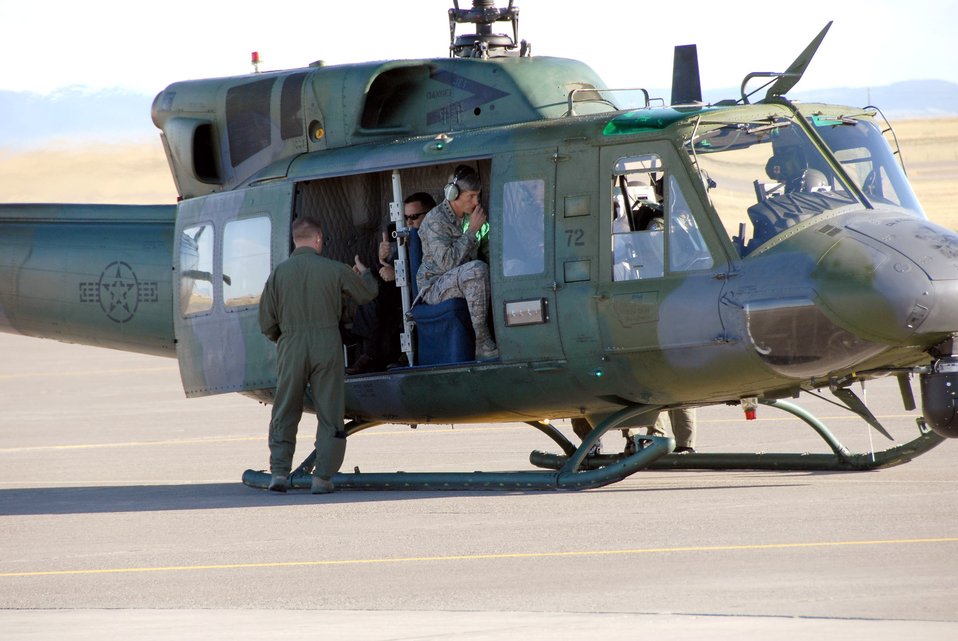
Top leaders stress importance of excellence, keeping a promise

Air Force Chief of Staff Gen. Norton A. Schwartz observes the pre-flight maneuvers of Capt. Ryan Dahlin, 40th Helicopter Squadron aircraft commander, while Special Agent Randy Metzger gives flight engineer Staff Sgt. Mike France a thumbs up. The UH-1N Huey transported the distinguished visitors to missile alert facility Bravo-01 Aug. 22 during their visit to Malmstrom Air Force Base, Mont.